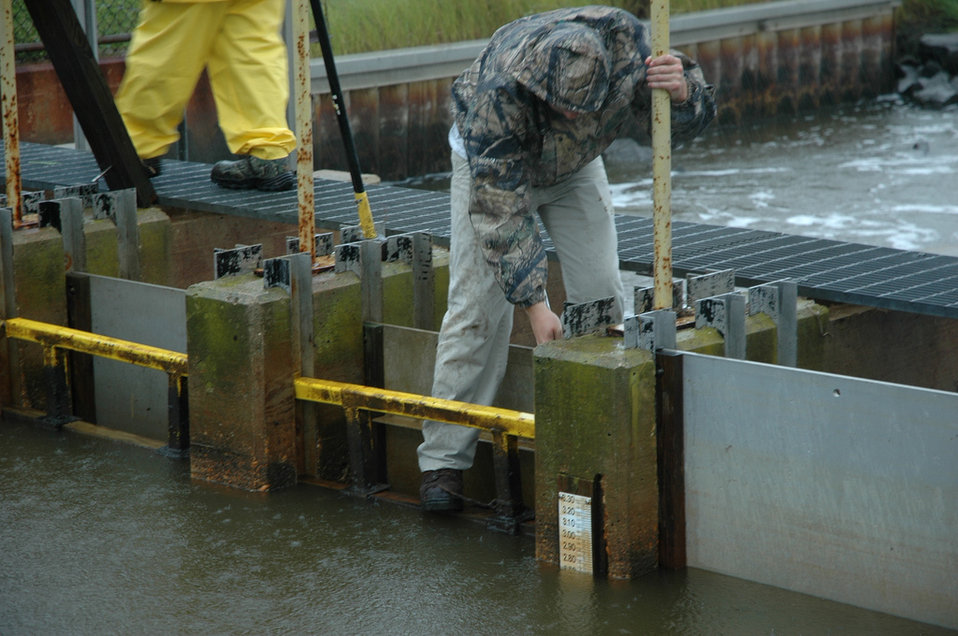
YCC water level control

U.S. Fish and Wildlife Service